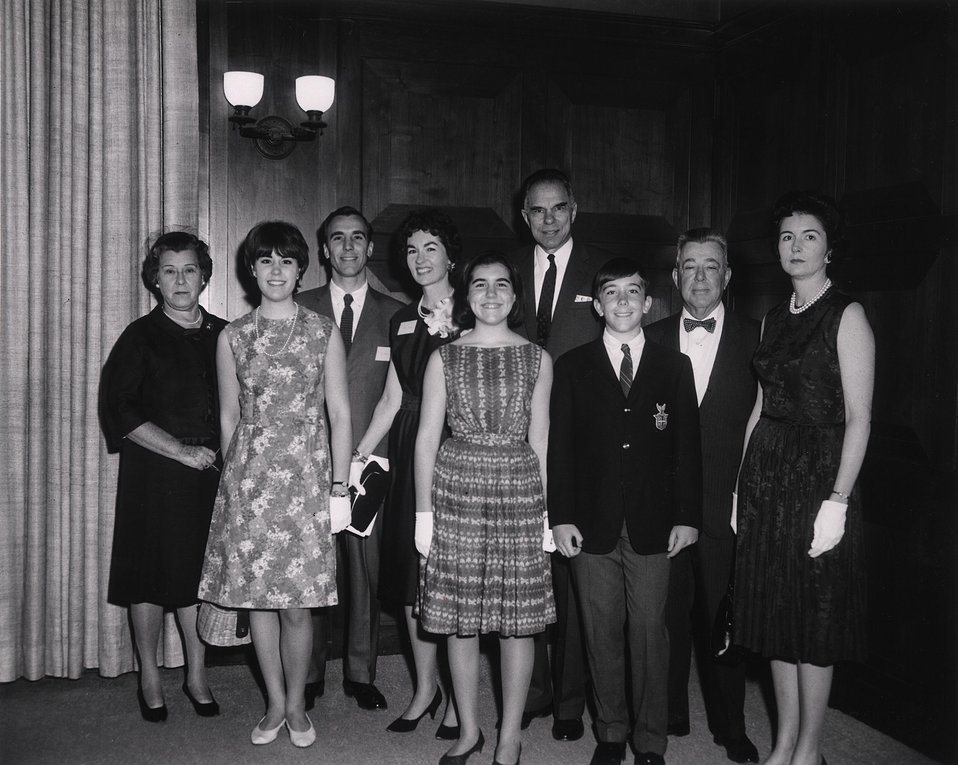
E. O . Lawrence Award Ceremony. National Academy of Sciences. April 29, 1965. Dr. Seaborg, Dr. Upton and Family.